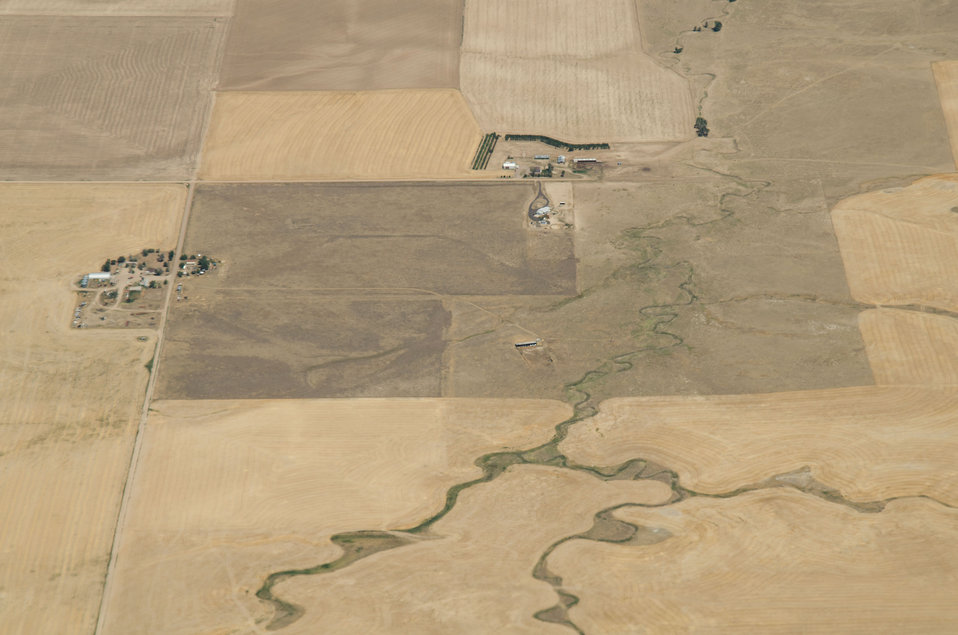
Aerial views of drought affected Colorado farm lands near Strasburg, Colorado, on Saturday, July 21, 2012.